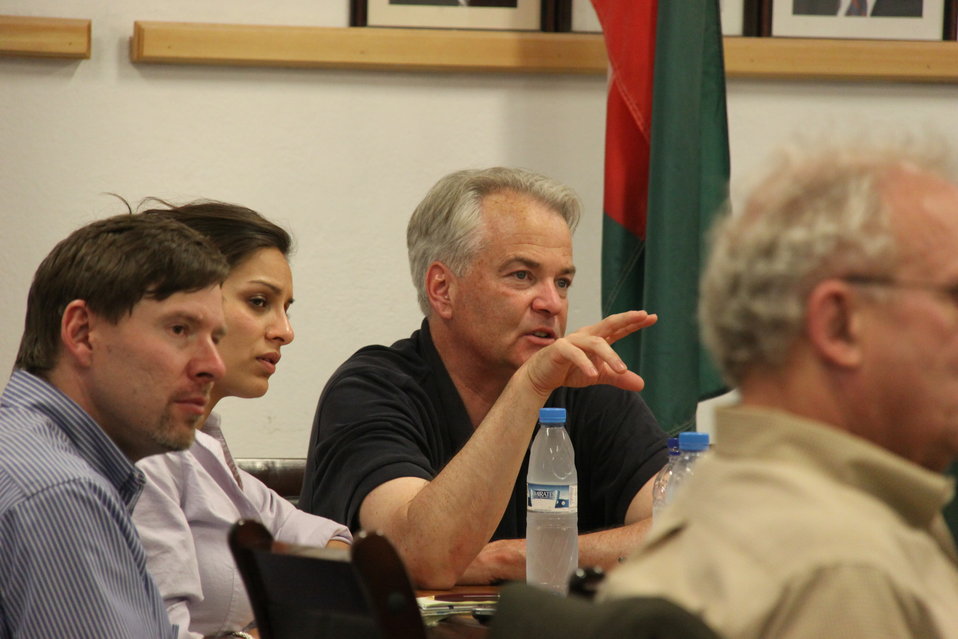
Meeting with Local Leaders in Kandahar